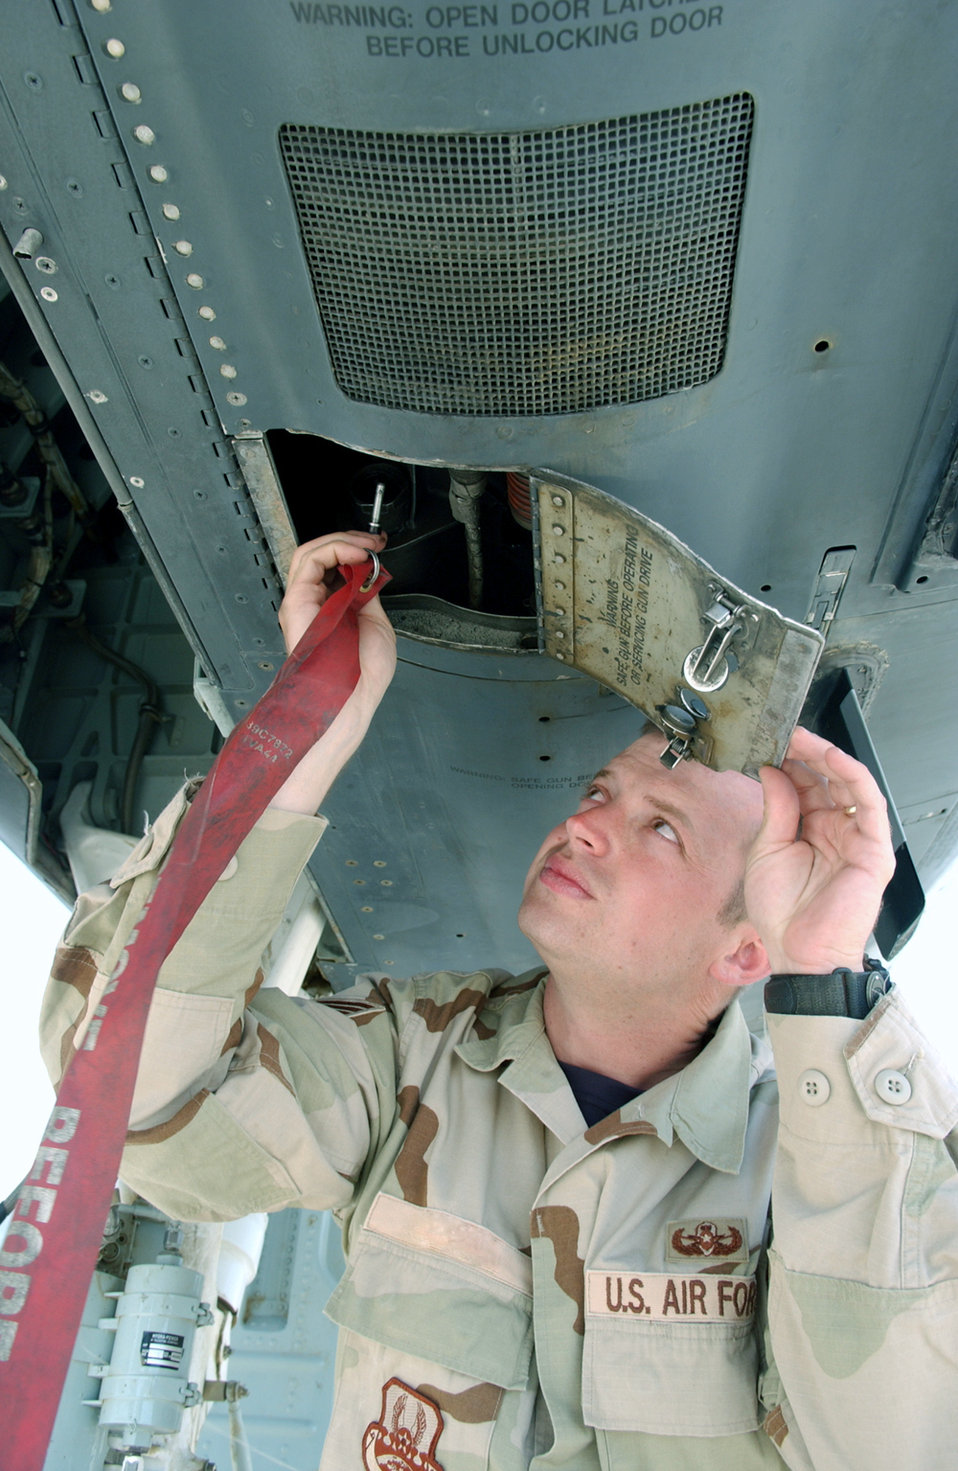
EOD is making Afghanistan safe for future

BAGRAM AIR BASE, Afghanistan -- Staff Sgt. Thomas places a safety pin on the 30 mm gun of an A-10 Thunderbolt II during an in-flight emergency exercise. Sergeant Thomas is an explosive ordnance disposal technician with the 455th Expeditionary Civil Engineer Flight here.